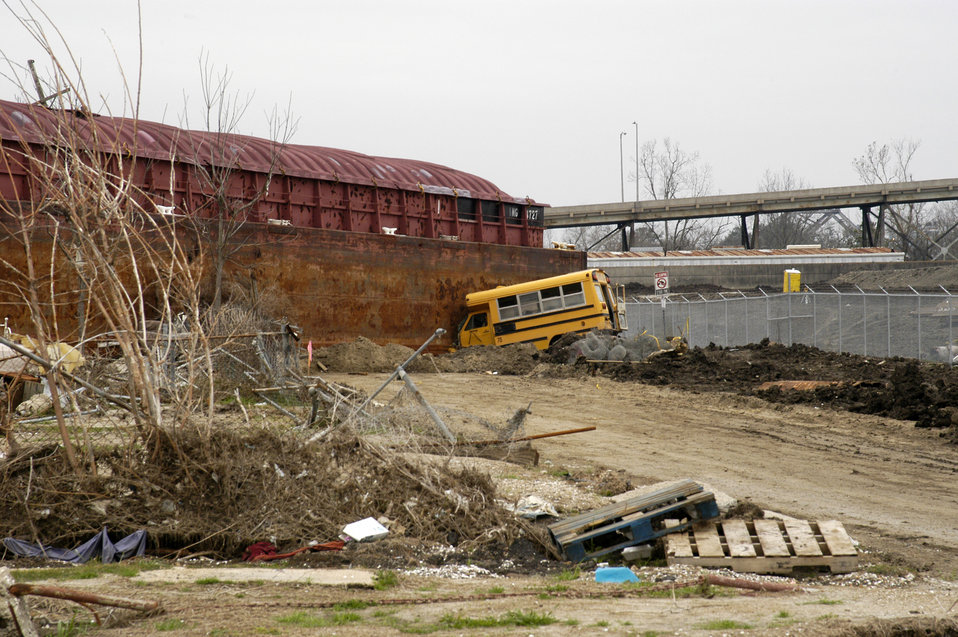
A barge breached a levee in the ninth ward in New Orleans, LA, as a result of the 20-foot storm surge from Hurricane Katrina. A small school bus was crushed under the barge as the floodwaters receded. Katrina made landfall on Monday morning, August 29, 2005 as a Category 3 hurricane with sustained winds of 125 mph with over a 20-foot storm surge. Katrina caused catastrophic damage over 90 thousand square miles across Louisiana with an estimated $75 billion dollars in damage. The total economic impact to the Gulf Coast was estimated at over $150 billion. 80% of New Orleans, LA, was underwater with some areas more than 20 feet deep. Less than a month later southern Louisiana was struck by a second Category 3 hurricane Rita inflicting more damage in the southwestern areas of Louisiana adding an addition $12 billion worth of damage to the already beleaguered state. The U.S. Army Corps of Engineers (USACE) under the auspices of Federal Emergency Management Agency (FEMA) was the lead service in providing assistance to the citizens of Louisiana. The U.S. Department of Agriculture (USDA) supplied emergency food aid, emergency loan assistance to farmers and home owners, and USDA personnel from around the nation volunteered their time and muscle to aid in the recovery operations.